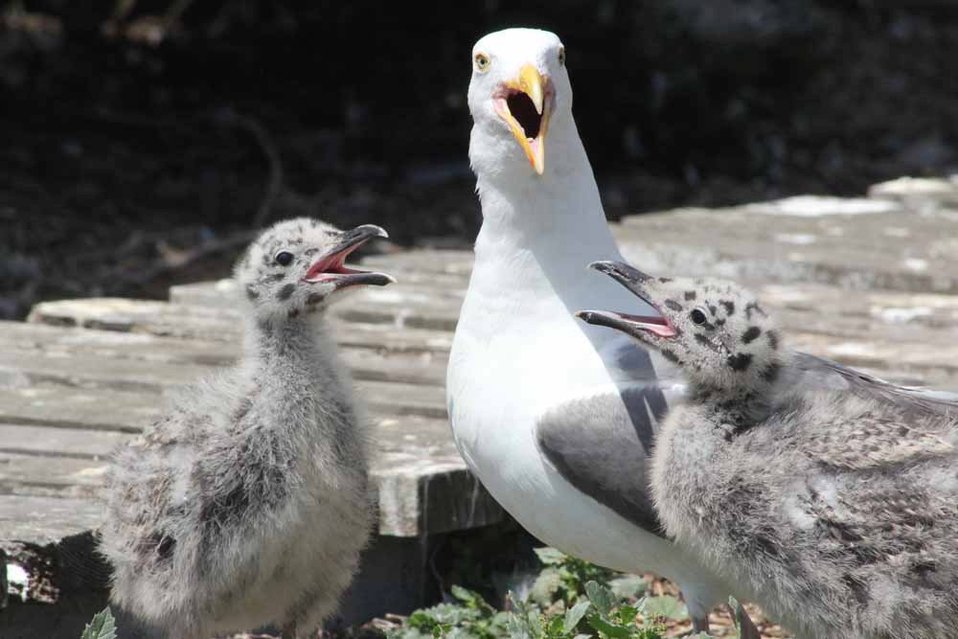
western gull and chicks

Farallon National Wildlife Refuge, CA